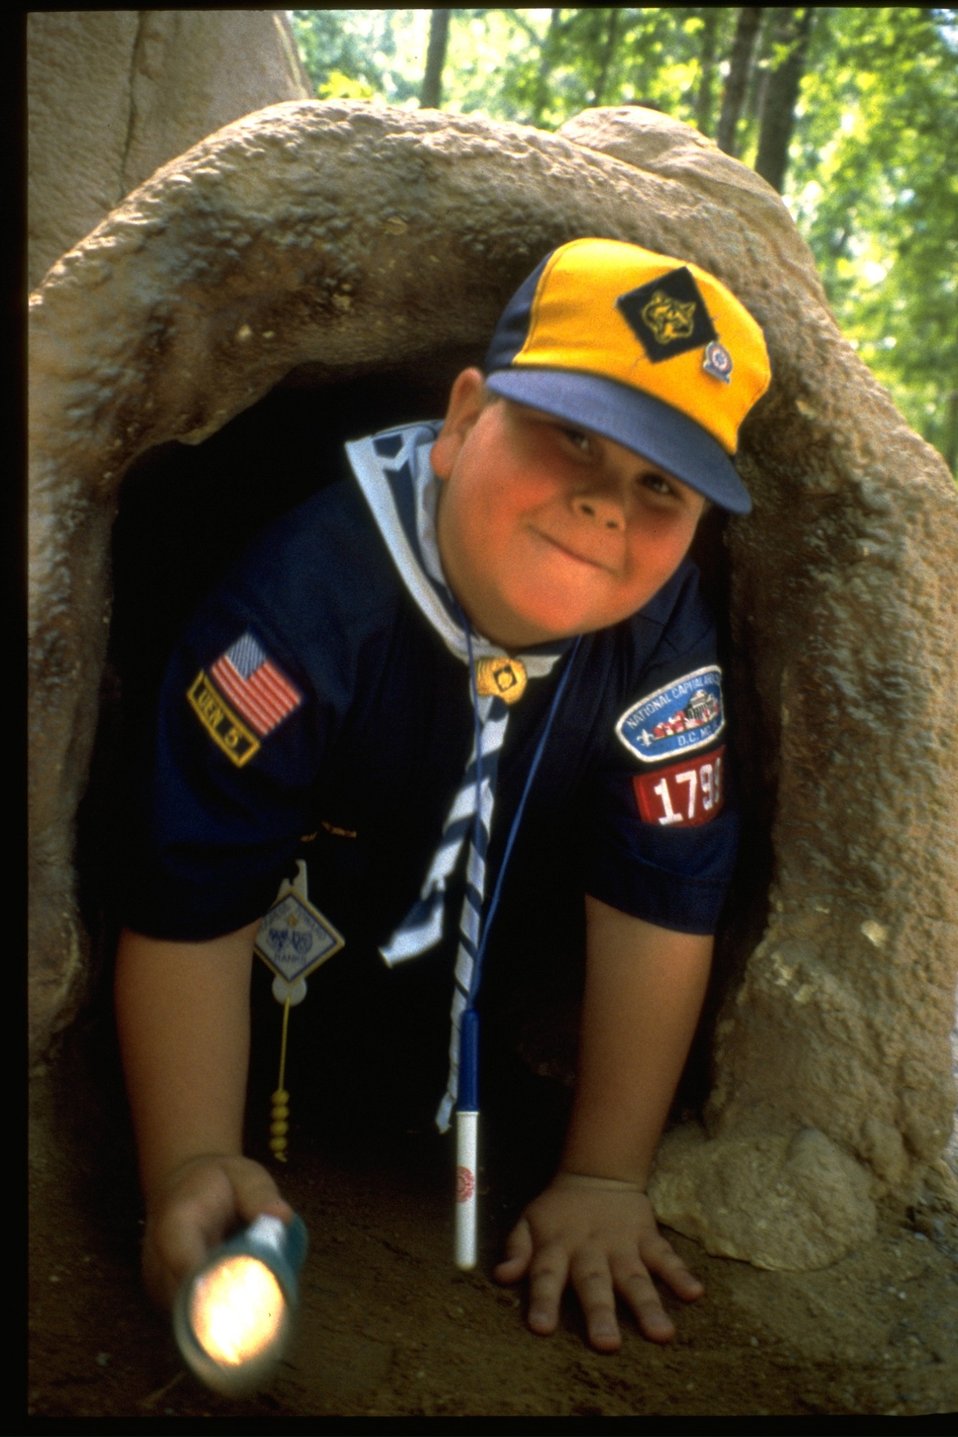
Boy Scouts National Jamboree: BLM caves exhibit.